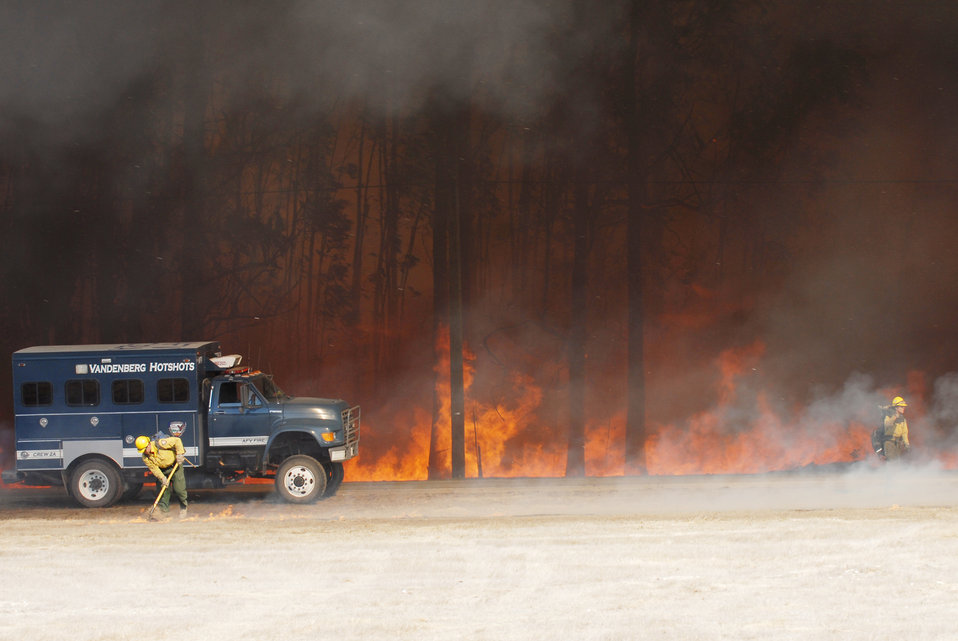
Blaze battlers

Base firefighters respond to a fire started at approximately 11:45 a.m. PDT Sept. 30 near Vandenberg Middle School on Vandenberg Air Force Base, Calif. More than 350 acres were burned by the fire.